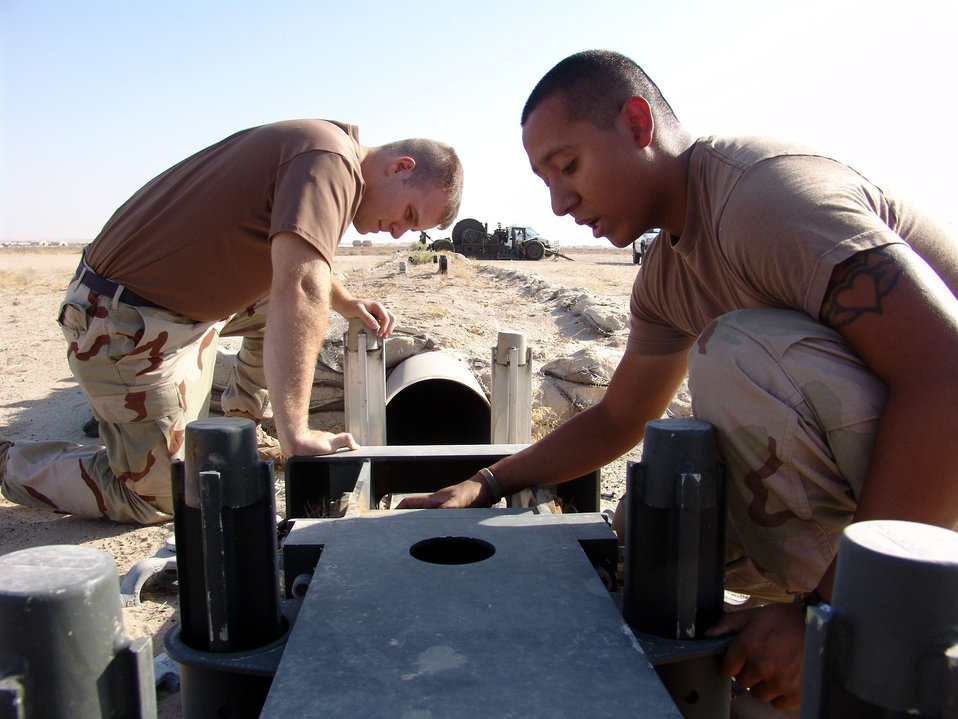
Desert duty

SOUTHWEST ASIA -- Airman 1st Class Jason Hannah (left) and Senior Airman Rene Fernandez-Hernandez conduct a daily inspection of a mobile aircraft arresting system. The system can safely stop distressed fighter aircraft using cables and a complex braking system. The system is directly responsible for saving the lives of aircrew members and millions of dollars in aircraft costs each time it stops an aircraft. The Airmen are assigned to the 386th Expeditionary Civil Engineer Squadron at a forward-deployed location. Airman Hannah is deployed from Little Rock Air Force Base, Ark., and Airman Fernandez-Hernandez is from Robins AFB, Ga.